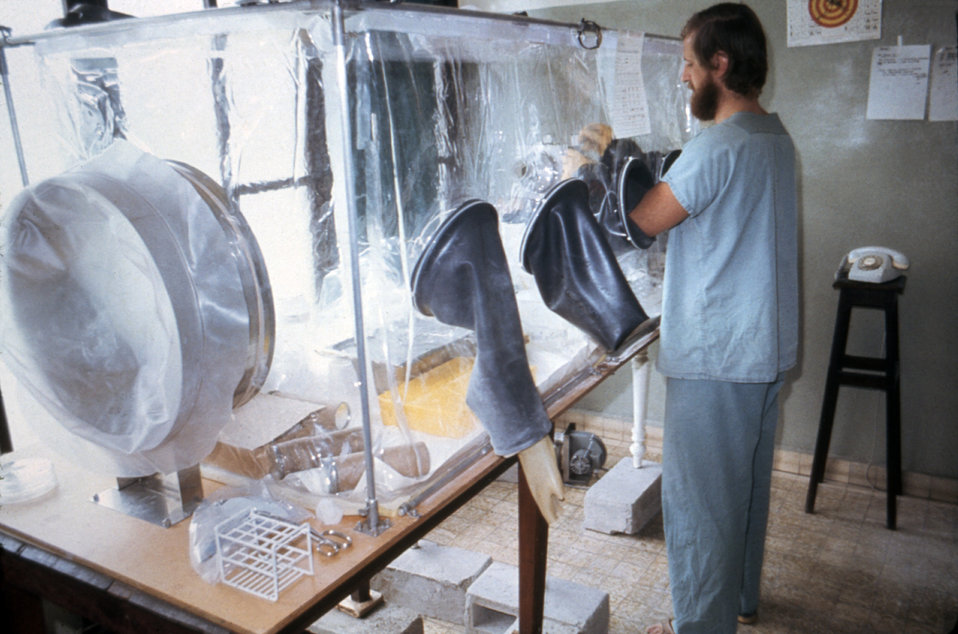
This CDC EIS officer is shown working in a plastic isolator unit, which was used during the 1976 Ebola outbreak in Zaire, now known as the Democratic Republic of the Congo.